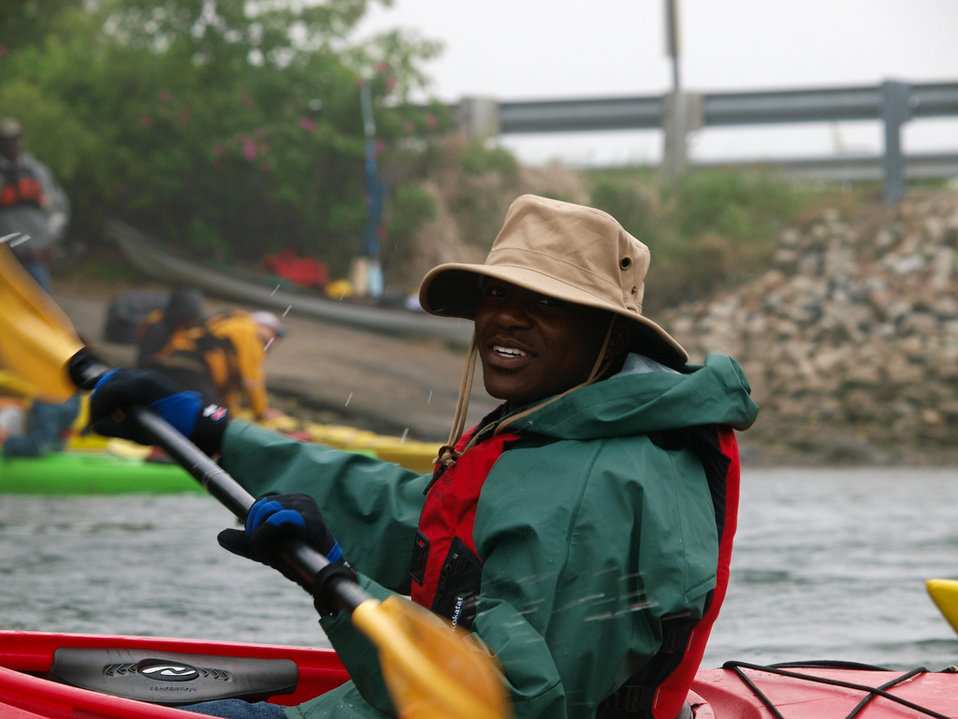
Chris Dupree - 2010 Annual CIP kayaking trip

U.S. Fish and Wildlife Service